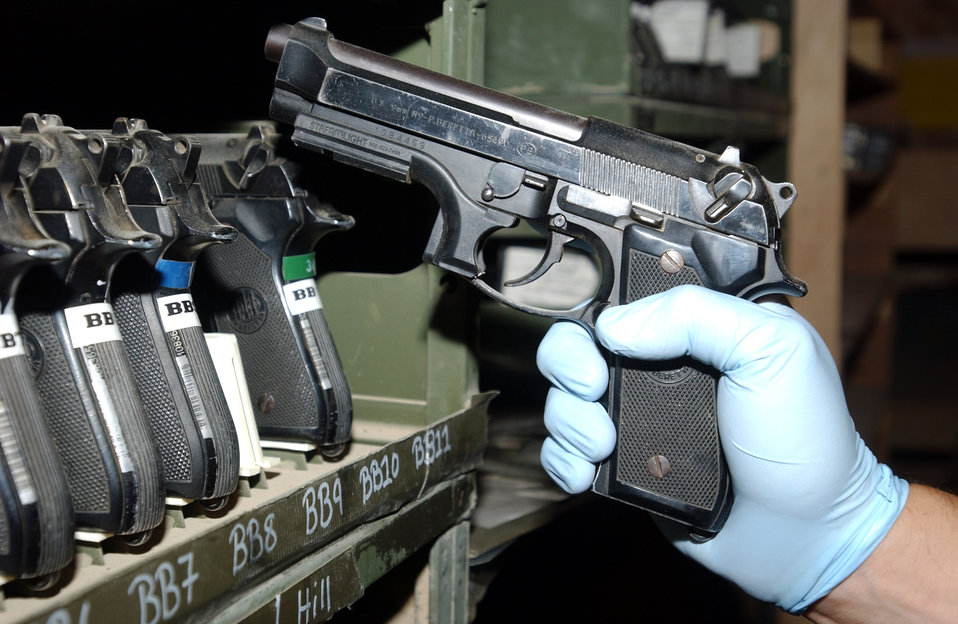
Arming the Airmen

TALLIL AIR BASE, Iraq -- Staff Sgt. Jonathan Samf retrieves an M-9 weapon from the armory shelf to issue to a security forces member here June 10. Sergeant Samf is a security forces Airmen with the 407th Expeditionary Security Forces Squadron.